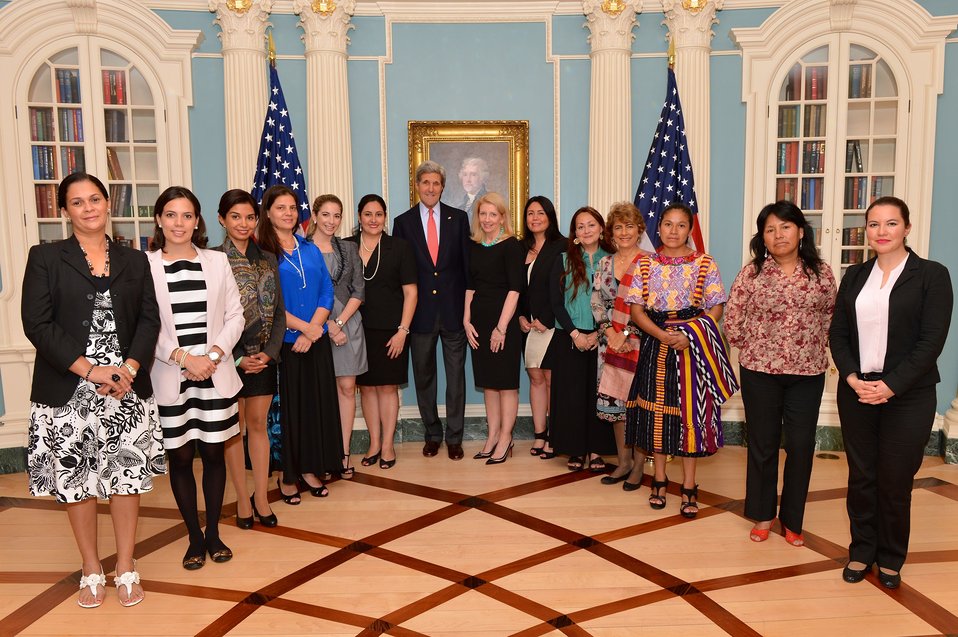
Secretary Kerry Meets With WEAmericas Entrepreneurship Group Participants

U.S. Secretary of State meets with women from the WEAmericas Entrepreneur Group at the U.S. Department of State in Washington, D.C., on May 9, 2014.